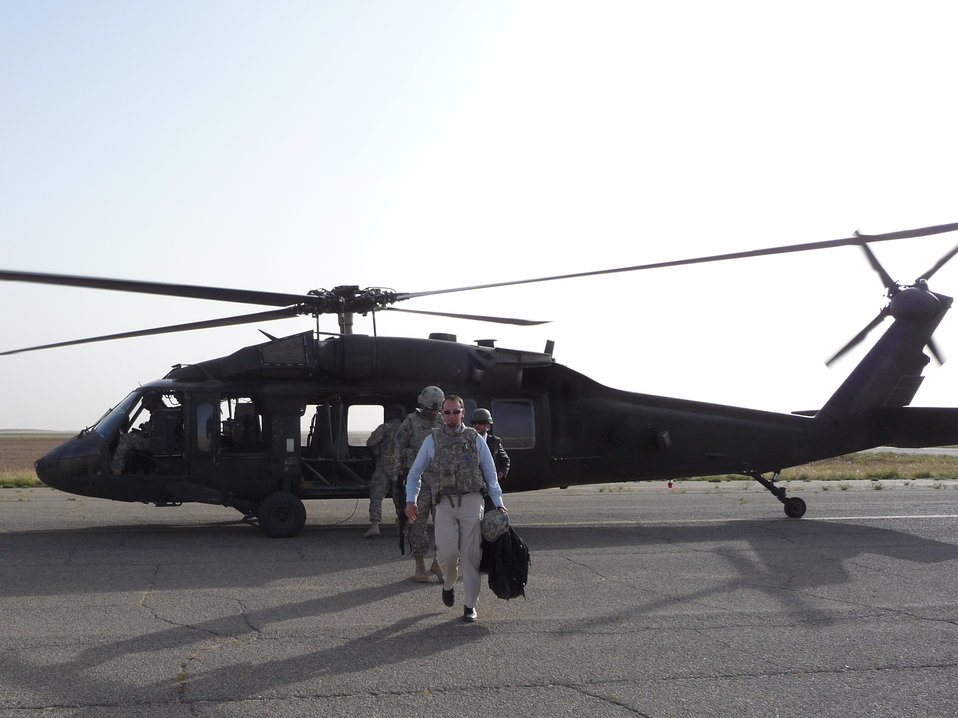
Dan Gedacht Arrives for Work

Dan Gedacht (U.S. Embassy Baghdad) arrives for work in Tal Afar, Ninewa Province, Iraq, 2010.